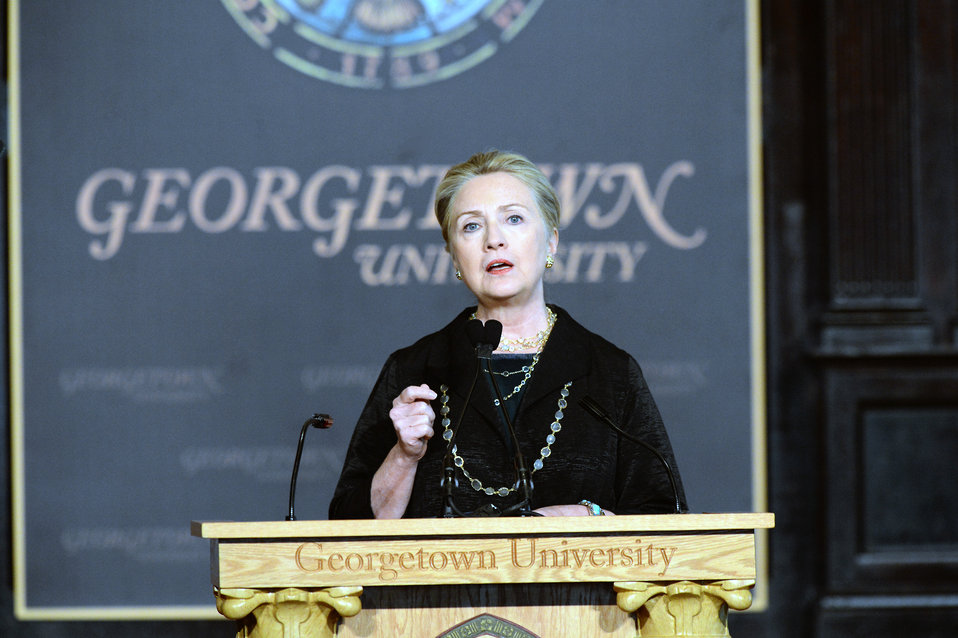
Secretary Clinton Delivers Remarks on Energy Diplomacy

U.S. Secretary of State Hillary Rodham Clinton delivers remarks on energy diplomacy at Georgetown University in Washington, D.C., October 18, 2012.